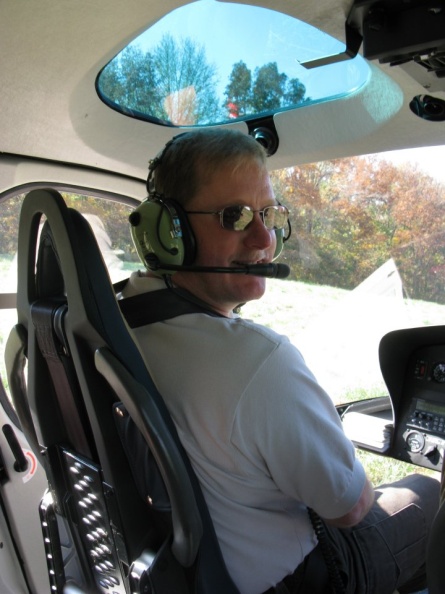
David Zabriskie, Assistant Refuge Manager at the Duck River unit in the Tennessee NWR complex, served in the U.S. Navy on Active Duty from 1993 to 1997 and in the reserves from 1997 to 2001. He deployed in summer of 1995 aboard the U.S.S. Roosevelt to the Persian Gulf, Red Sea, and Adriatic Sea, helping end the Bosnia-Herzegovia conflict.